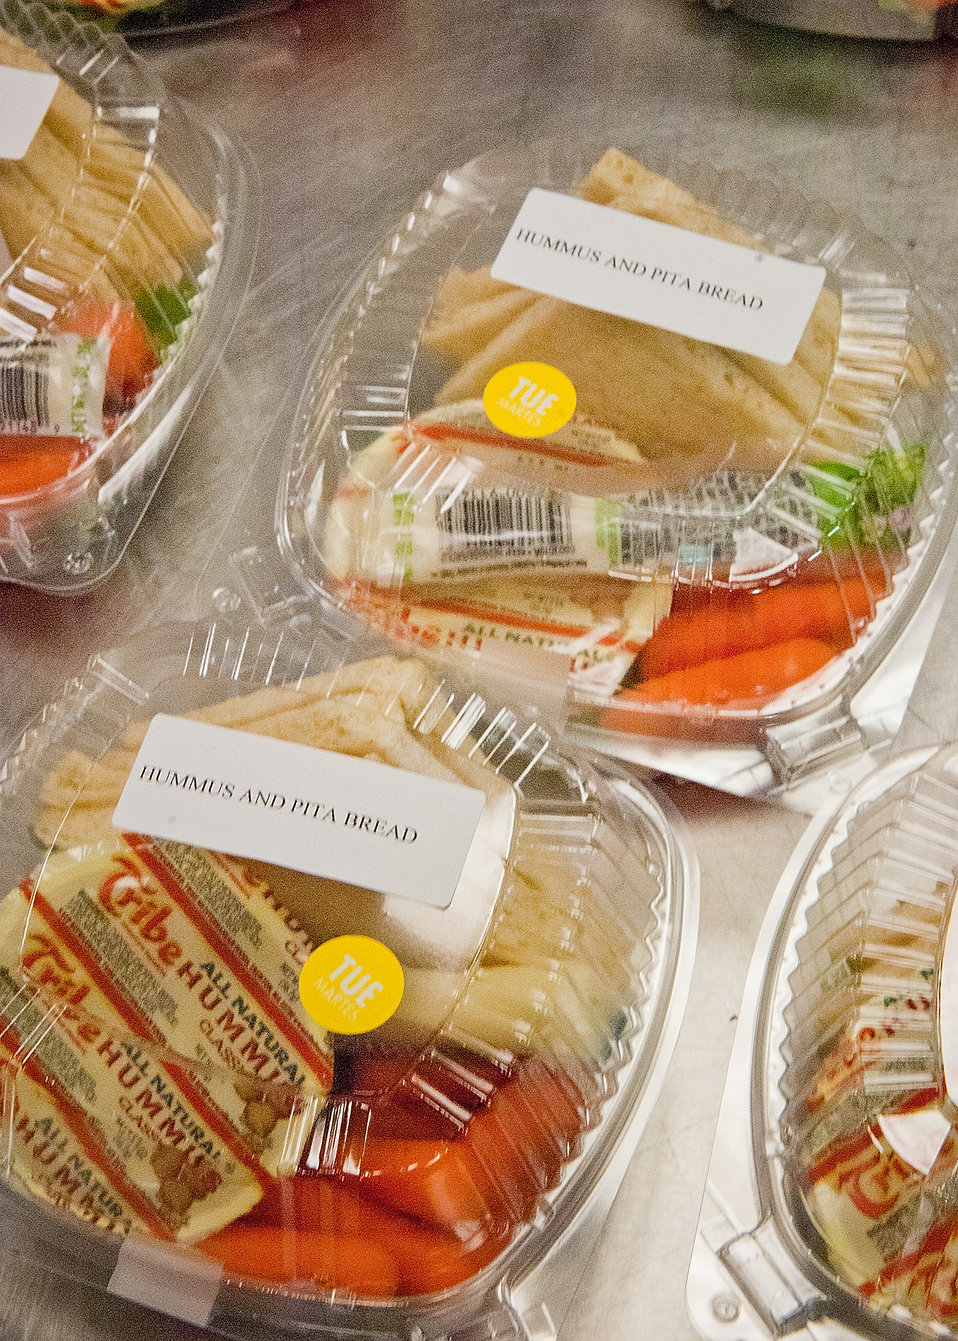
Hummus, pita bread, string cheese and carrots prepared for the National School Lunch Program at Washington-Lee High School in Arlington, Virginia, on Wednesday, October 25, 2011. The National School Lunch Program is a federally assisted meal program administered by the United States Department of Agriculture, Food and Nutrition Service operating in public, nonprofit private schools and residential child care institutions. It provides nutritionally balanced, low-cost or free lunches to children each school day.